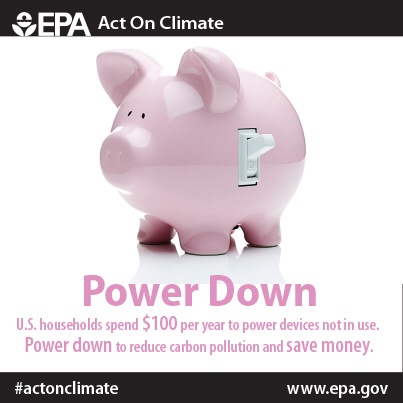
Power Down

Let’s shut this down. Powering off electronics not in use can save you $15 monthly and cut carbon pollution. #ActOnClimate